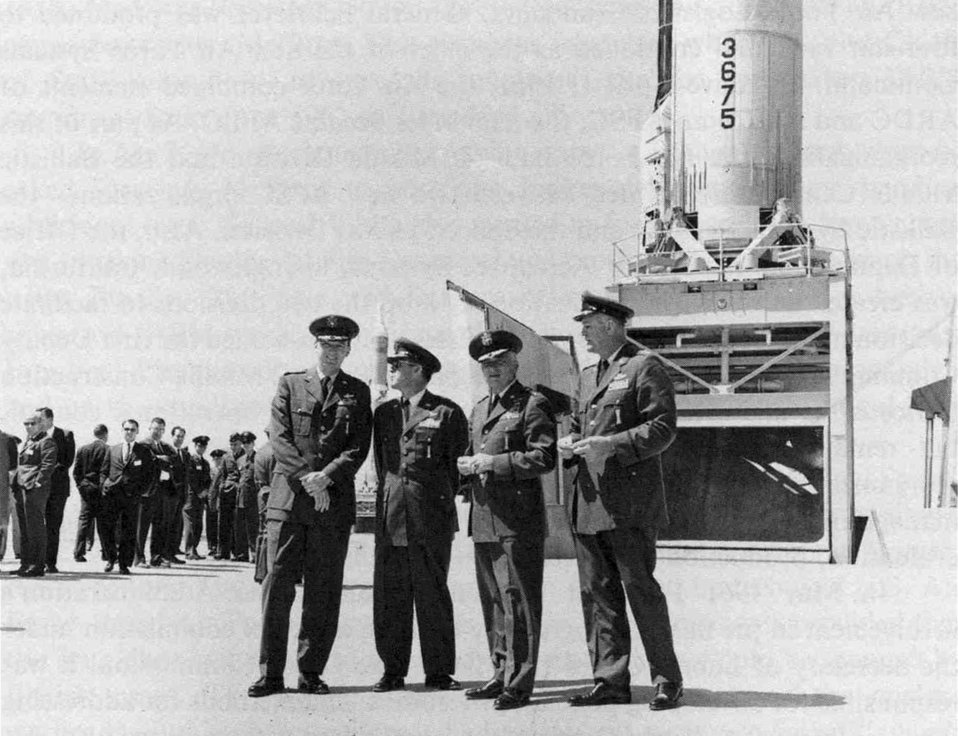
Titan readiness ceremony - May 1962

Attending ceremonies to mark operational readiness of a Titan site near Lowry Air Force Base, Colo., in May 1962 are (left to right) Gen. Bernard Schriever, Maj. Gen. Thomas Gerrity, Lt. Gen. Archi Old and Lt. Gen. Howell Estes, Jr.